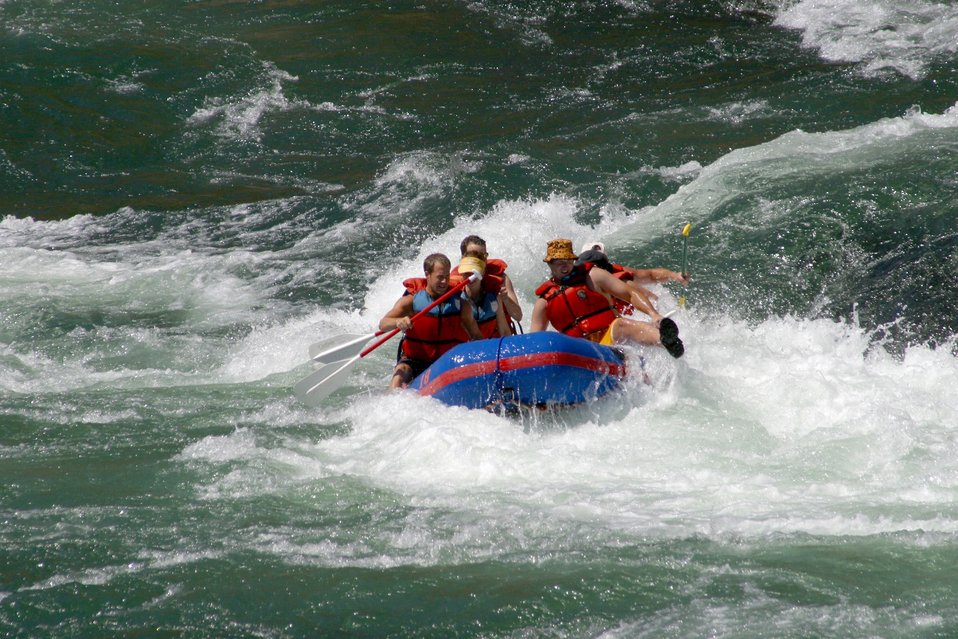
Boxcar Rapids class III, has large waves with a small drop that form turbulent currents. 7/26/03 Pelton Dam 3600 cfs: Moody Rapids 4300 cfs.